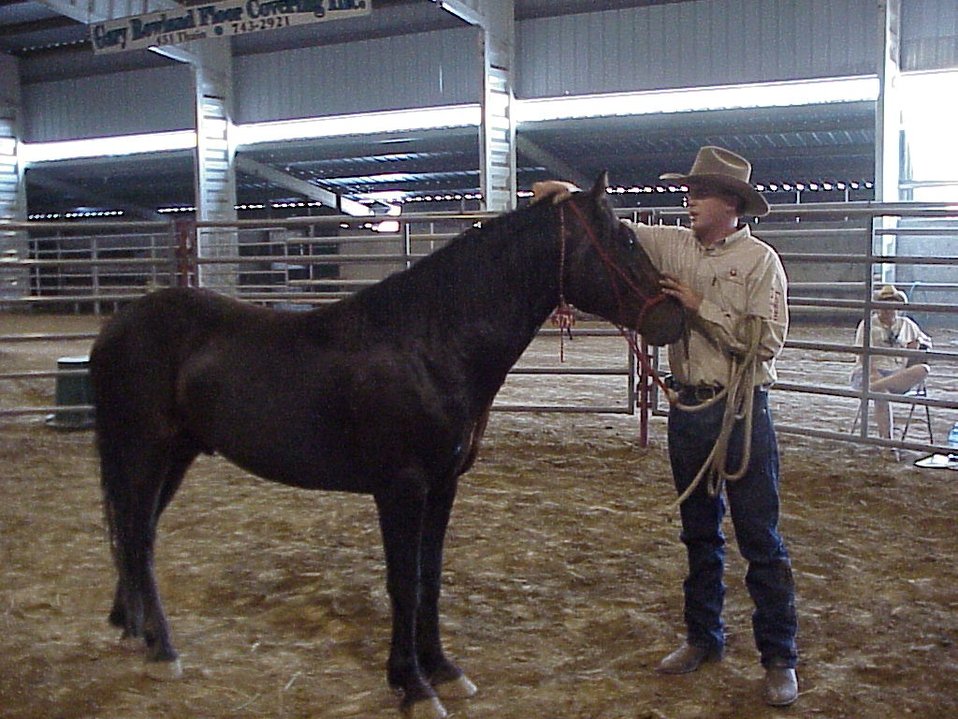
Horse Gentler Mario Johnson Lewiston Wild Horse and Burro Adoption Program Auction WHB indoor auction Cottonwood Field Office UCSC Upper Columbia Salmon Clearwater District